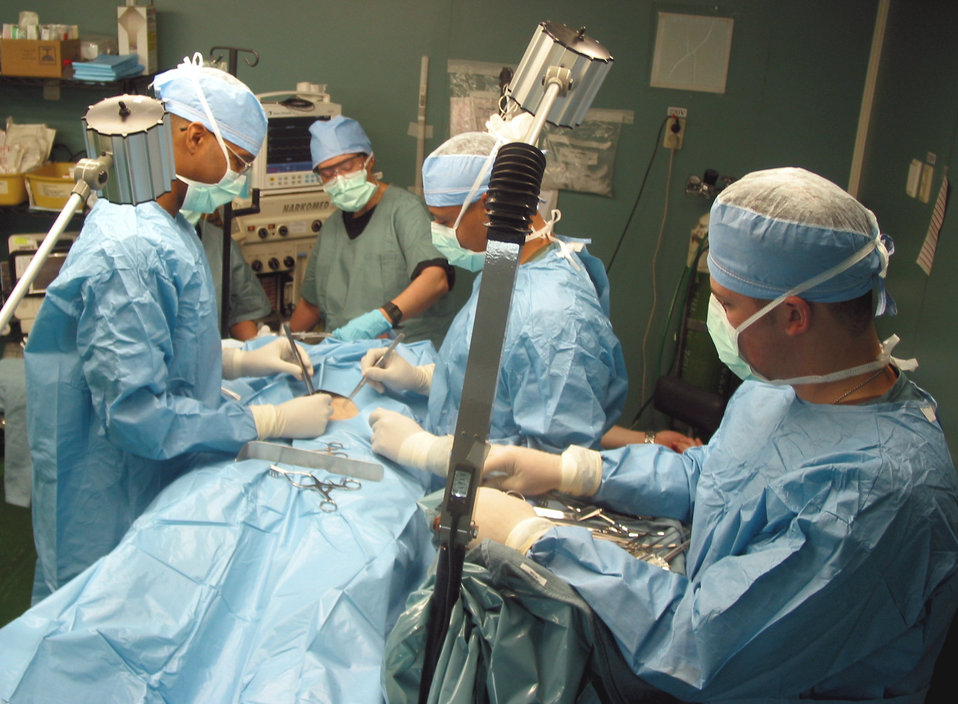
Surgical team ready for duty

MANAS AIR BASE, Kyrgyzstan -- (From left to right) Capt. (Dr.) Andre Graham, Senior Airman Nathan Vanepps, Staff Sgt. Chris McDaniel, Lt. Col. Deborah Cleary and Maj. Delia Zorrilla practice surgical techniques on a simulated patient. They are all part of the 376th Expeditionary Medical Group's surgical team.